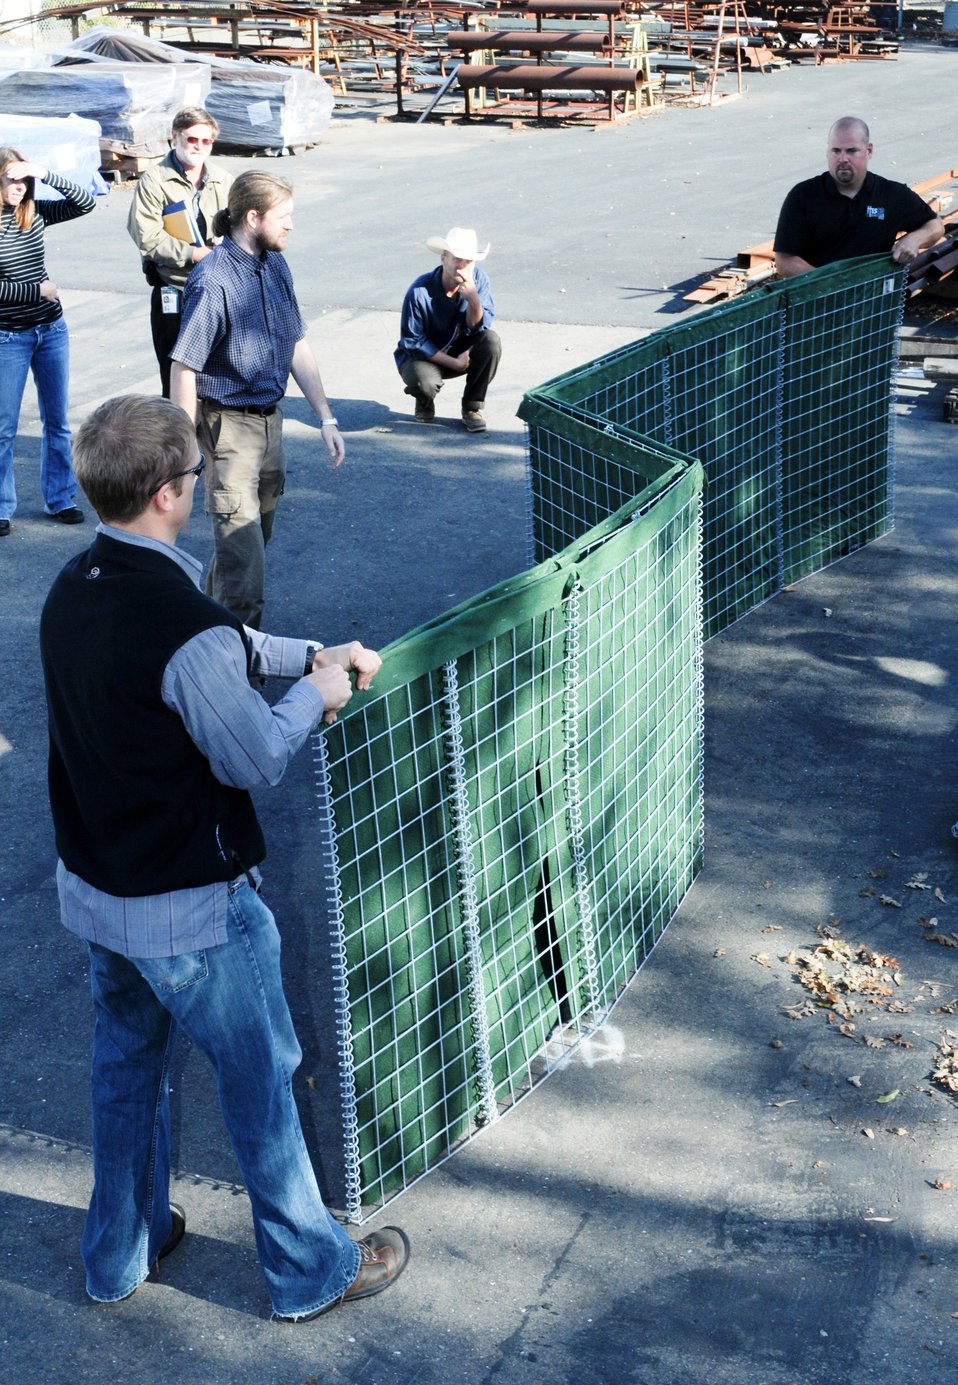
WEST SACRAMENTO, Calif. (Nov. 03, 2010) – Employees from the U.S. Army Corps of Engineers Sacramento District assemble portable flood-water barriers during a product demonstration at a Corps facility here Nov. 3. When filled with sand or rock, the series of interlocking metal cells lined with special material form flood-water barriers. The metal cells were one of three new products being tested by Corps employees for future use in emergency and disaster operations.